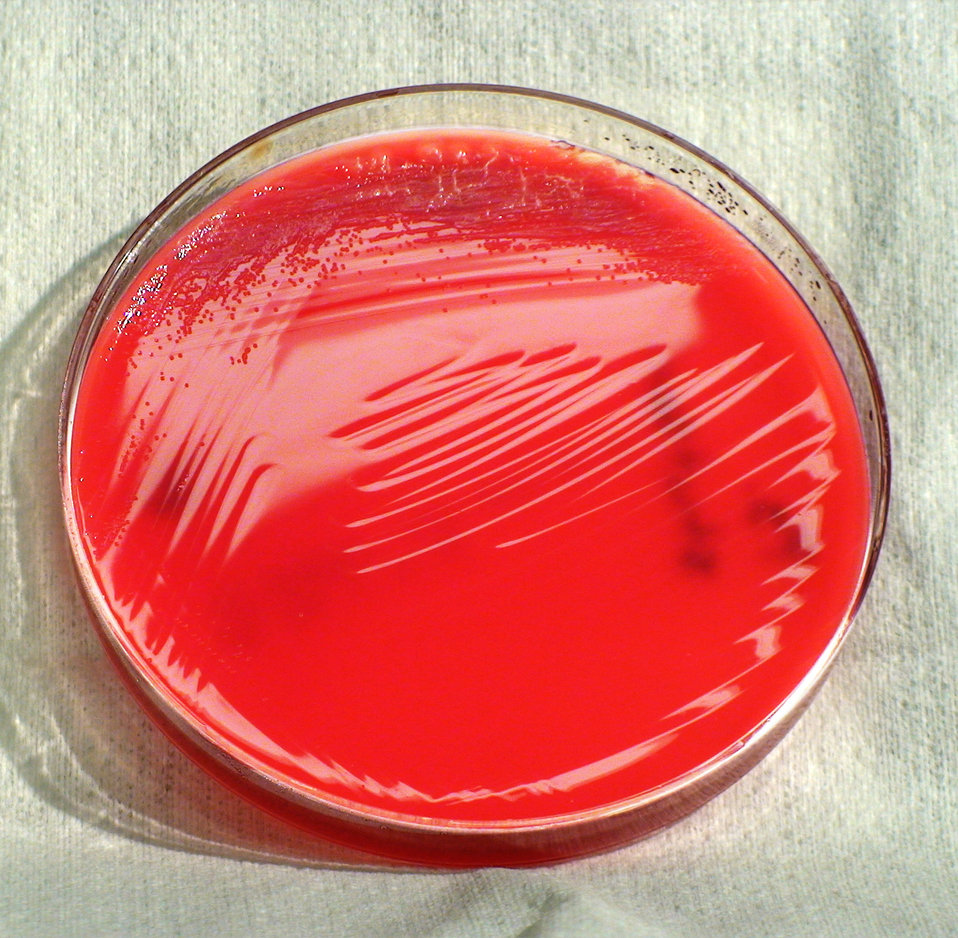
This photograph depicts the colonial morphology displayed by Gram-negative Pseudomonas monash stutzeri bacteria, which was grown on a medium of sheep's blood agar (SBA), for a 24 hour time period, at a temperature of 37�C. See PHIL 12460, for a closer view of these bacterial colonies.